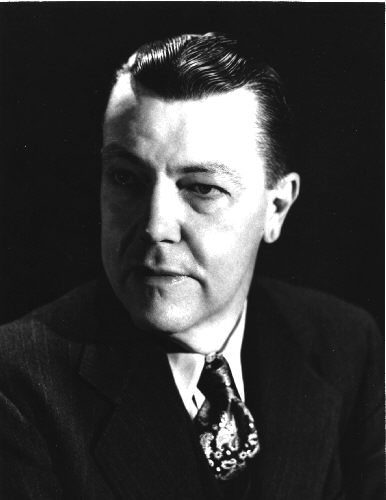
Raymond A. Vonderlehr, M.D., Chief, CDC, 1947 - 1951.